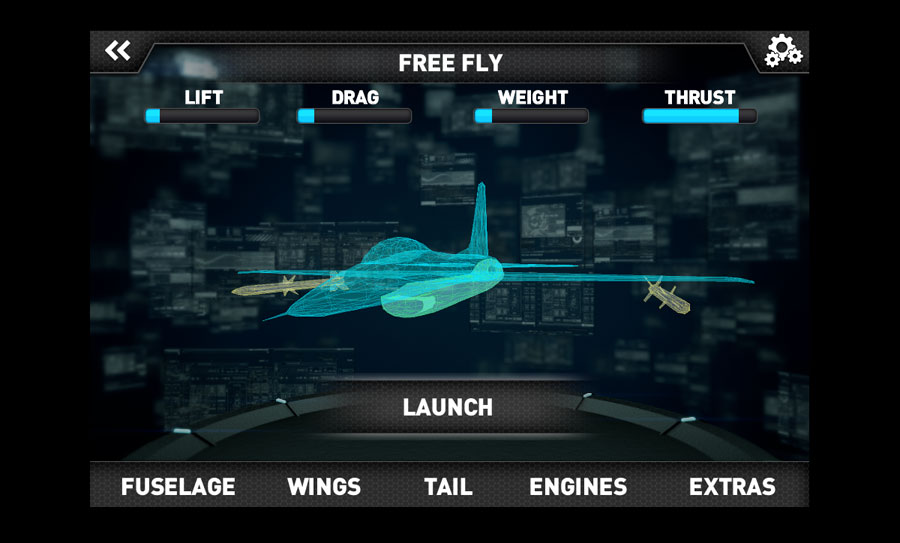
Make-It-Fly

A screenshot from the Air Force's Make-It-Fly mobile app.